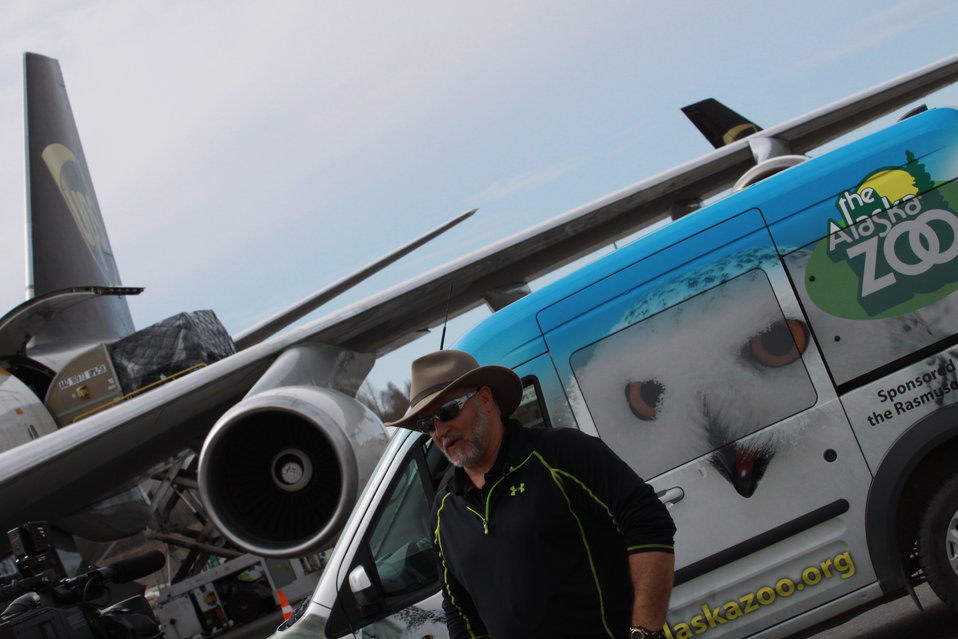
lampi interviewed